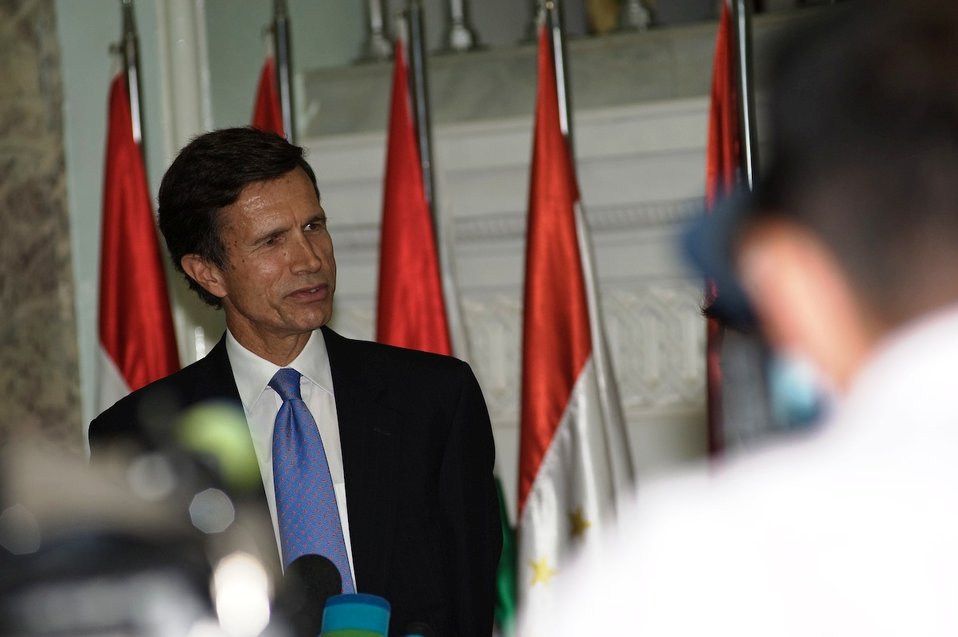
Assistant Secretary Blake Visits Tajikistan

U.S. Assistant Secretary of State Robert O. Blake visits Dushanbe, Tajikistan, on September 1, 2010.